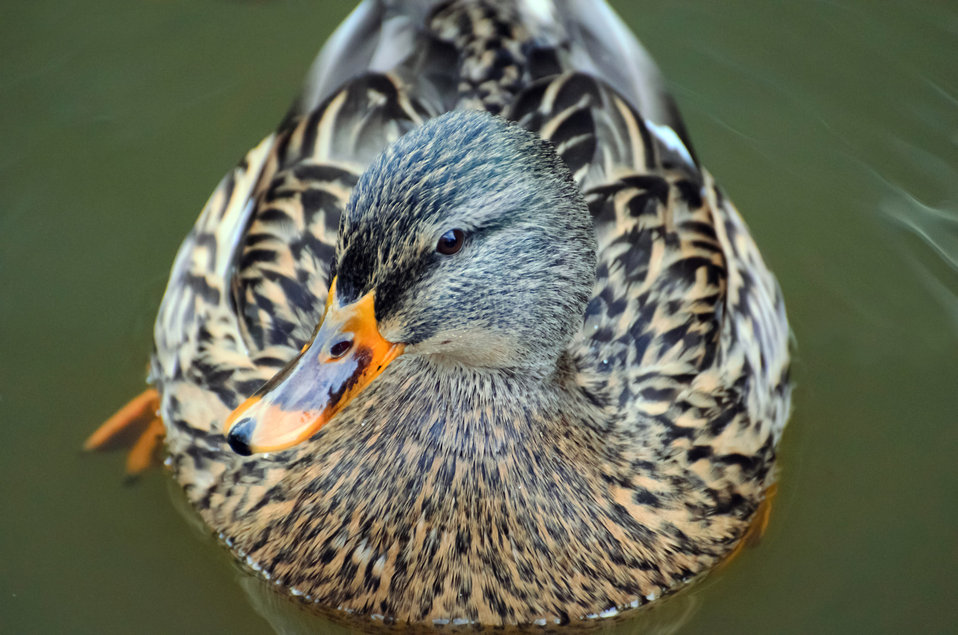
Mallard - anas platyrhynchos - female.